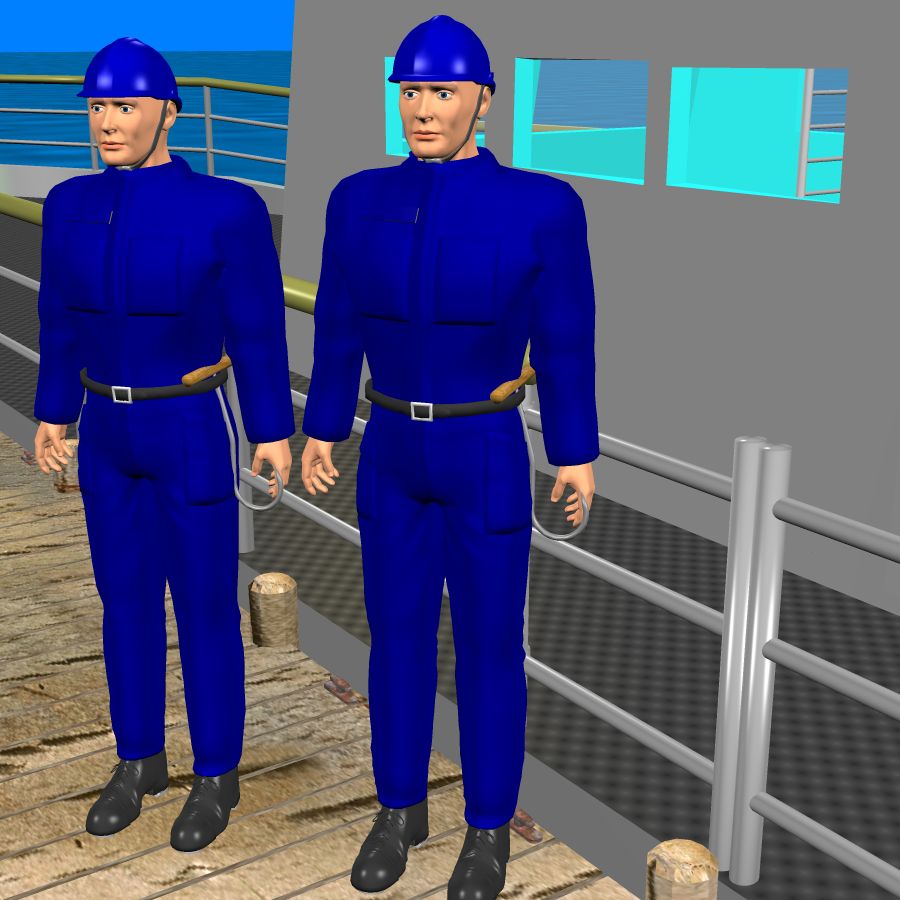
Two men with longshoreman's hooks in belts, on jetty; drawing